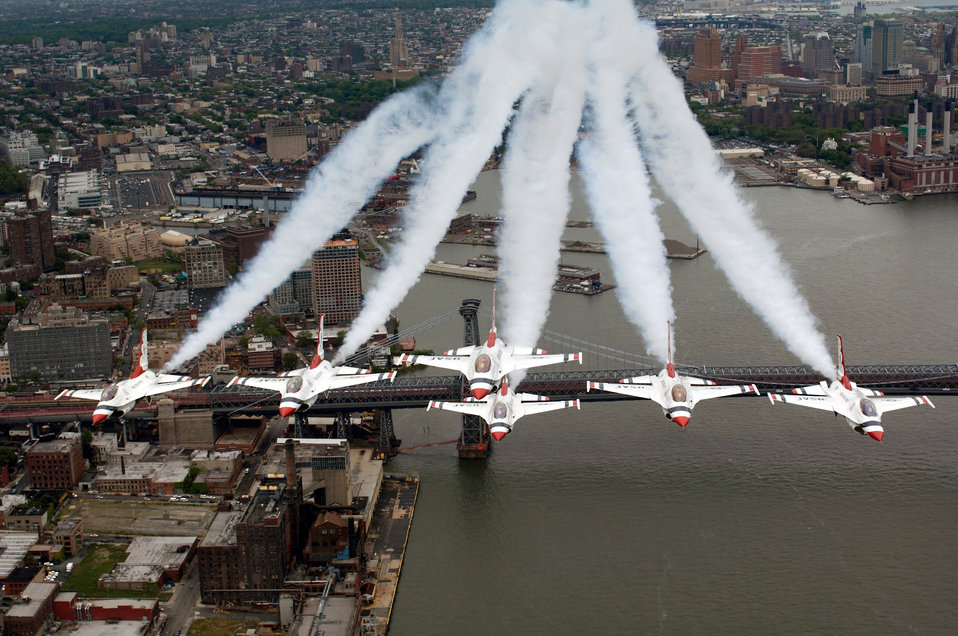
Thunderbirds release 2009 air show schedule

Officials from the Air Force Air Demonstration Squadron, the Thunderbirds, release the 2009 air show schedule.